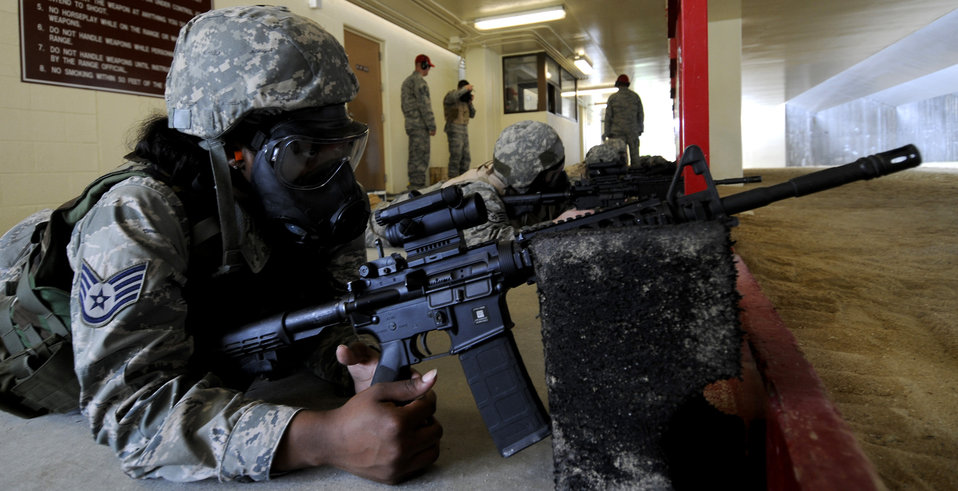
Combat arms training

An Airman awaits the command to fire May 24, 2011, during combat arms training at Kadena Air Base, Japan.